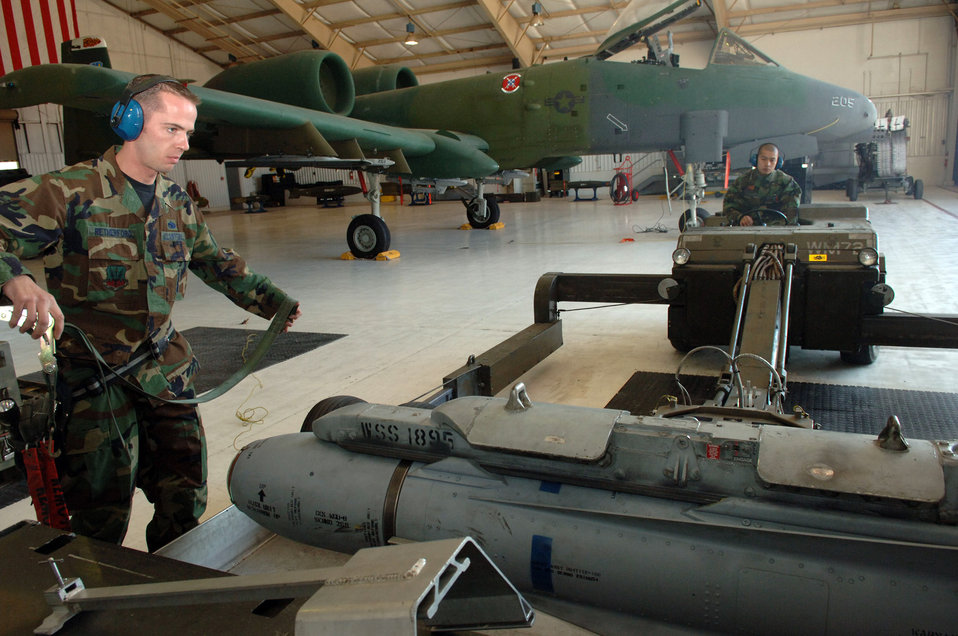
Load Crew

DAVIS-MONTHAN AIR FORCE BASE, Ariz. (AFPN) -- Staff Sgt. Paul Retherford and Airman 1st Class Bahl Delos-Santos prepare the bomb-lift truck as they get ready to transport a Maverick missile to an awaiting A-10 Thunderbolt as part of a load crew competition here. The Airmen are assigned to the 355th Aircraft Maintenance Squadron, which is comprised of the 354th, 357th and 358th Aircraft Maintenance Units. The 357th AMU placed first and completed the load in 38 minutes and 44 seconds.